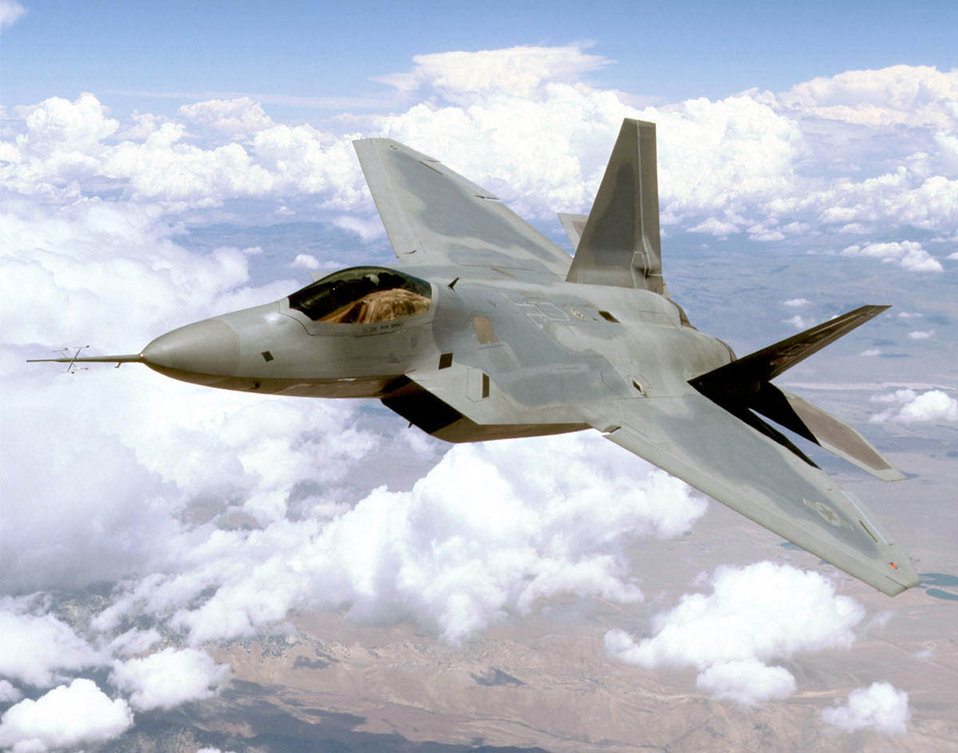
Raptor in flight

ABOVE THE MOJAVE DESERT -- The Air Force's new superiority fighter will dominate the future air combat arena by integrating advanced avionics, stealth and supercruise. With approximately 80 percent of development complete and two test aircraft flying, the F/A-22 Raptor program is nearing completion of a 13-year development program.